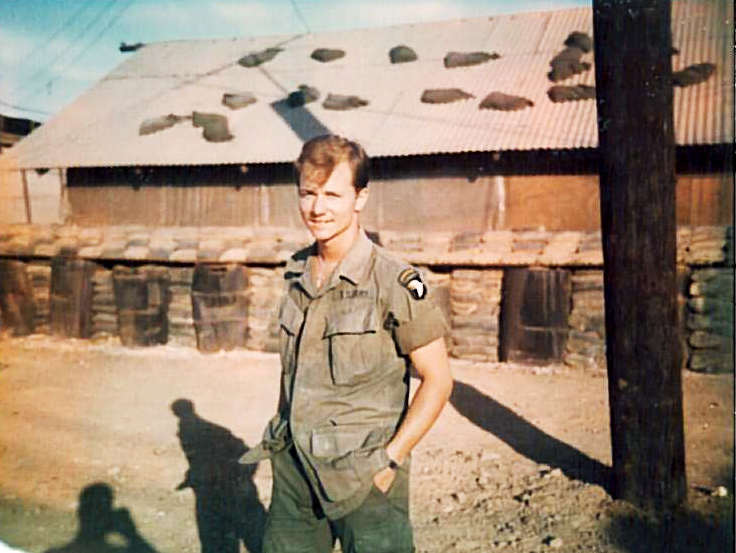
Ed Britton, Refuge Manager for the Upper Mississippi River National Wildlife & Fish Refuge, Savanna District, served in the Army from 1970 to 1971.He was a Specialist 4th Class, working in Communications with duties including Top Secret Cryptographer.